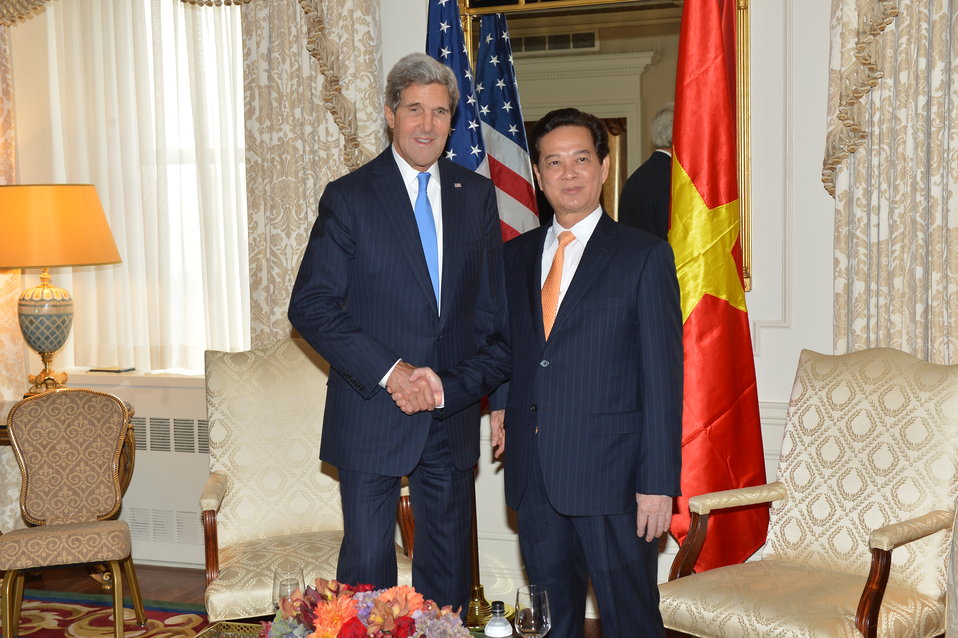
Secretary Kerry Meets With Vietnamese Prime Minister Nguyen Tan Dung

U.S. Secretary of State John Kerry meets with Vietnamese Prime Minister Nguyen Tan Dung in New York City on September 27, 2013.